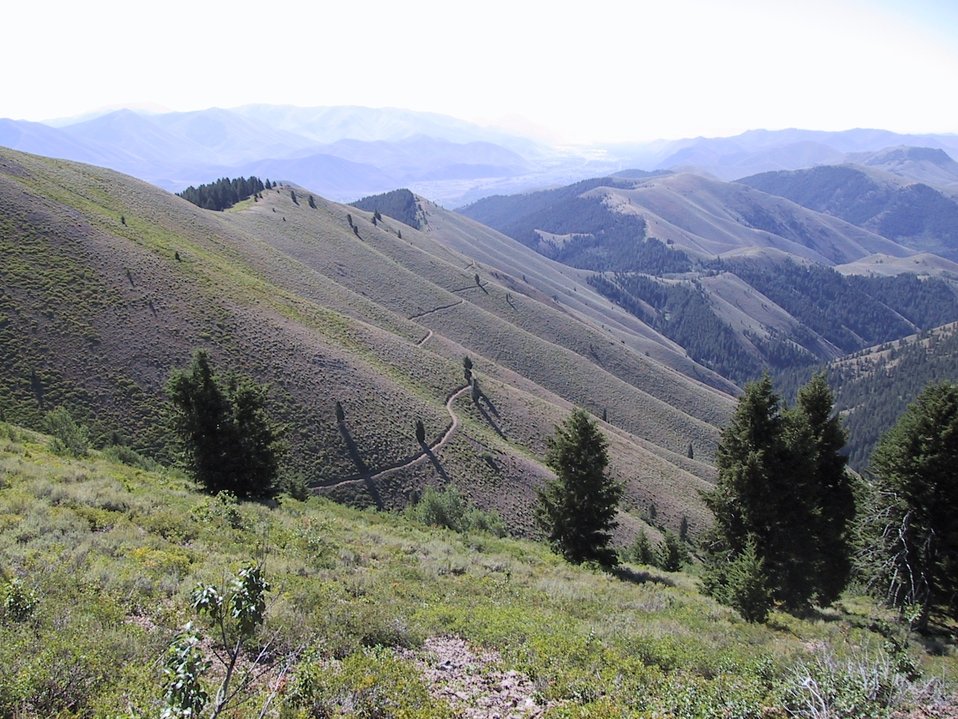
Blaine County Trails Shoshone Field Office USRD Upper Snake River District